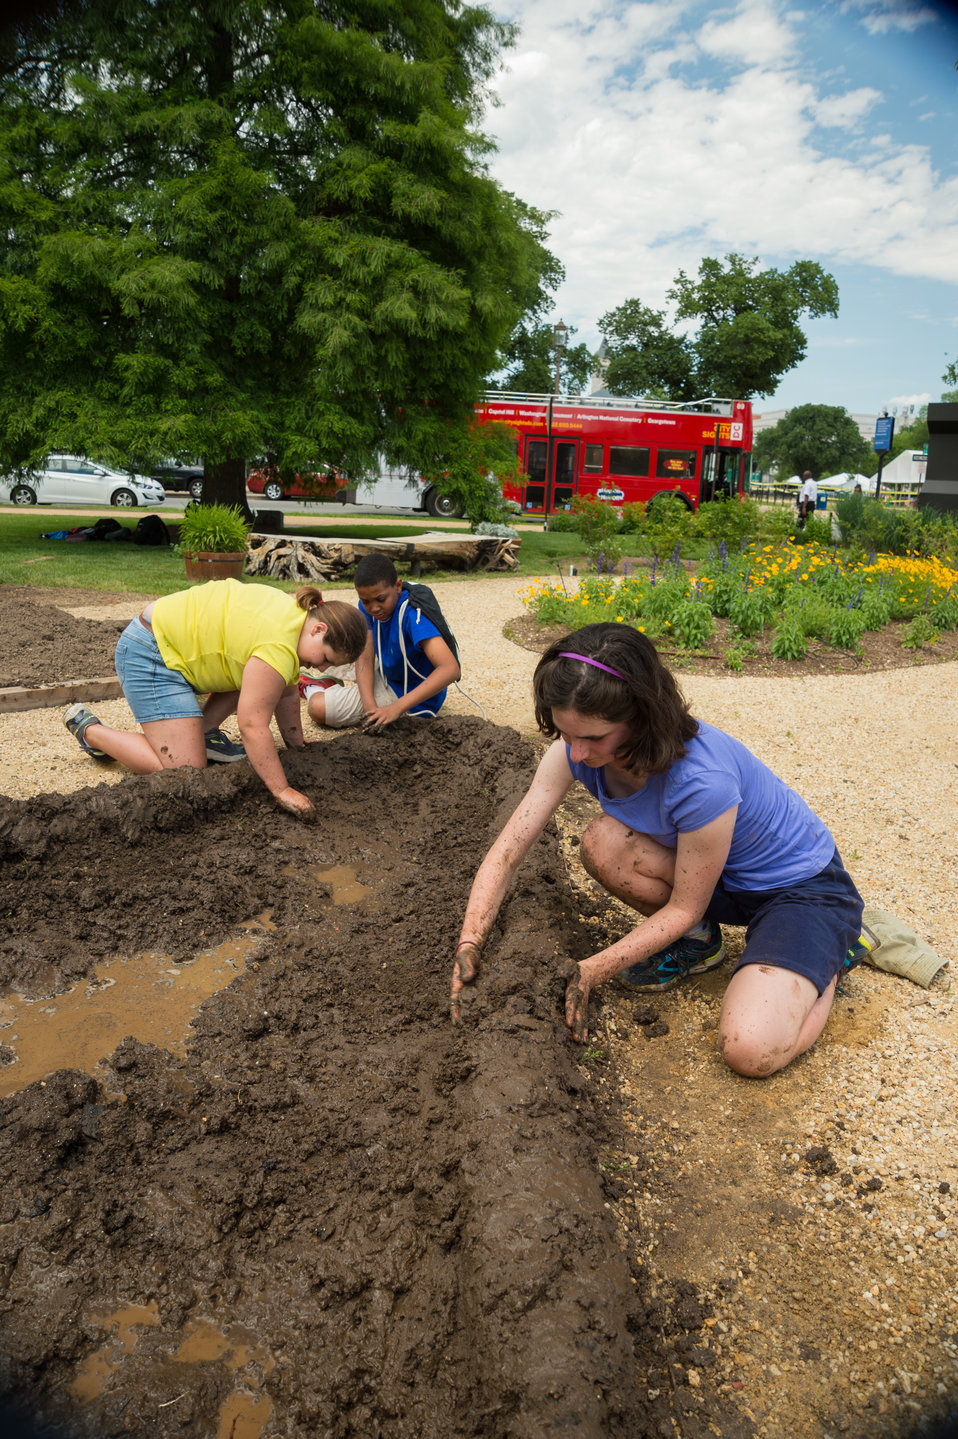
Corina Capuano, Chad Gregory and Ellie Hart students from Alice Deal Middle School volunteered in the People’s Garden at the U.S. Department of Agriculture Wed. Jun. 4, 2014. The students have been studying hunger, food security, how to prevent hunger and organizations involved in solving hunger situations nationally and worldwide. The USDA’s Faith Based and Neighborhood Partnerships office sponsored the event.